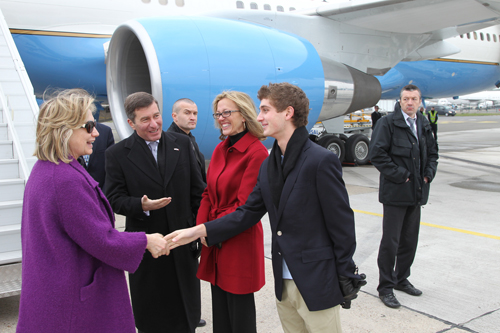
Secretary Clinton Is Welcomed to Paris By Ambassador Rivkin, Ms. Tolson, and His Son

U.S Secretary of State Hillary Rodam Clinton, left, is welcomed to Paris by U.S. Ambassador Charles Rivkin, Ms. Tolson, his wife, and his son, at Le Bourget Airport in France, March 19, 2011.